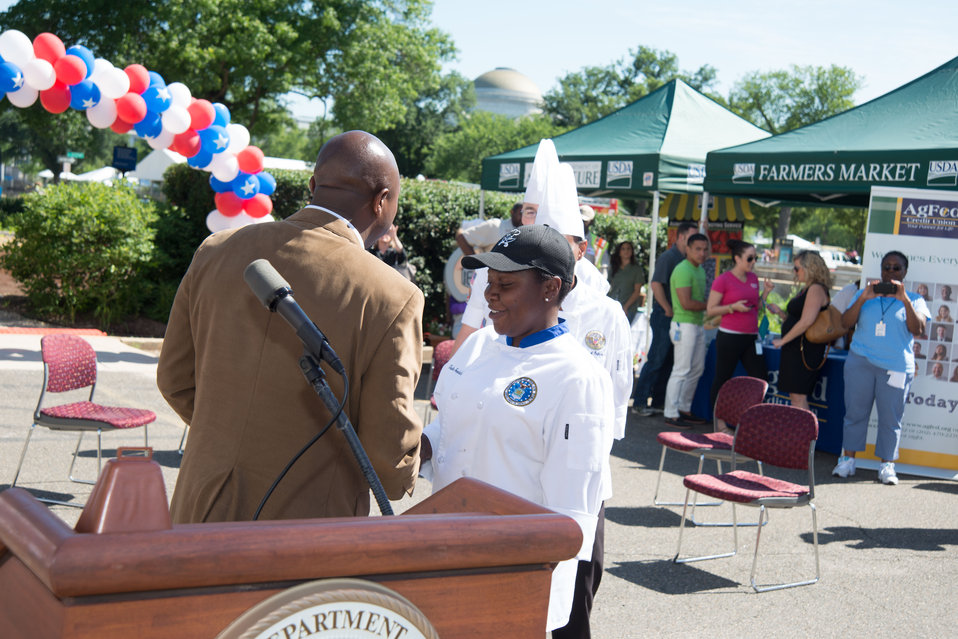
U.S. Air Force Staff Sergeant (SSgt) Tasha N. Goodrich receives challenge coin from U.S. Department of Agriculture (USDA) Farm and Foreign Agricultural Service (FAS) Deputy Under Secretary Karis T. Gutter at the opening USDA’s 2014 Farmers Market in the east parking lot of USDA in Washington, D.C. on Friday, Jun. 6, 2014.